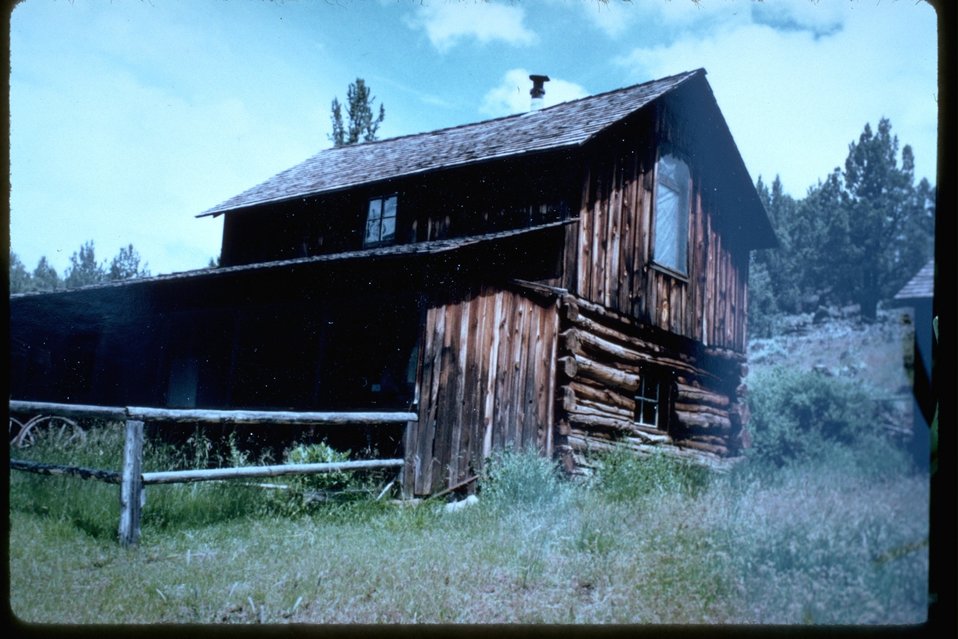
The main house of the Riddle Brothers ranch.